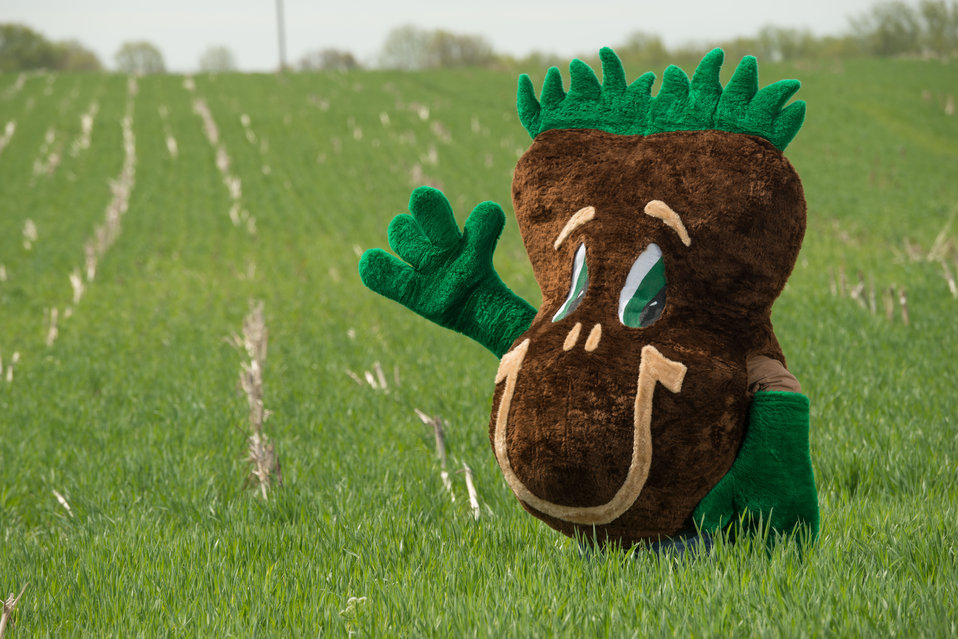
The U.S. Department of Agriculture’s (USDA) Natural Resources Conservation Service (NRCS) mascot Sammy Soil on the Sunny Ridge Farm in Laytonsville, MD on Monday, Apr. 28, 2014. The Sunny Ridge Farm owned by the Stabler family uses a number of conservation practices to promote soil health and water quality. No-till cropping systems use cover crops that help water soak deep into the soil and machines work lightly on top of the soil preserving vertical pores that are water’s pipeline to the roots. Cover crops prevent erosion, improve soil health, hold water, supply nutrients, and suppress weeds and pests. Fenced waterways keep livestock away from the streams and drainage to low points of fields, which allows grass, trees and other vegetation to grow. The plants take up nutrients from the livestock effluent, reducing pollution to waterways. The farm also has a well-designed agrichemical facility for an environmentally safe area to handle and store tanks of on-farm chemicals.